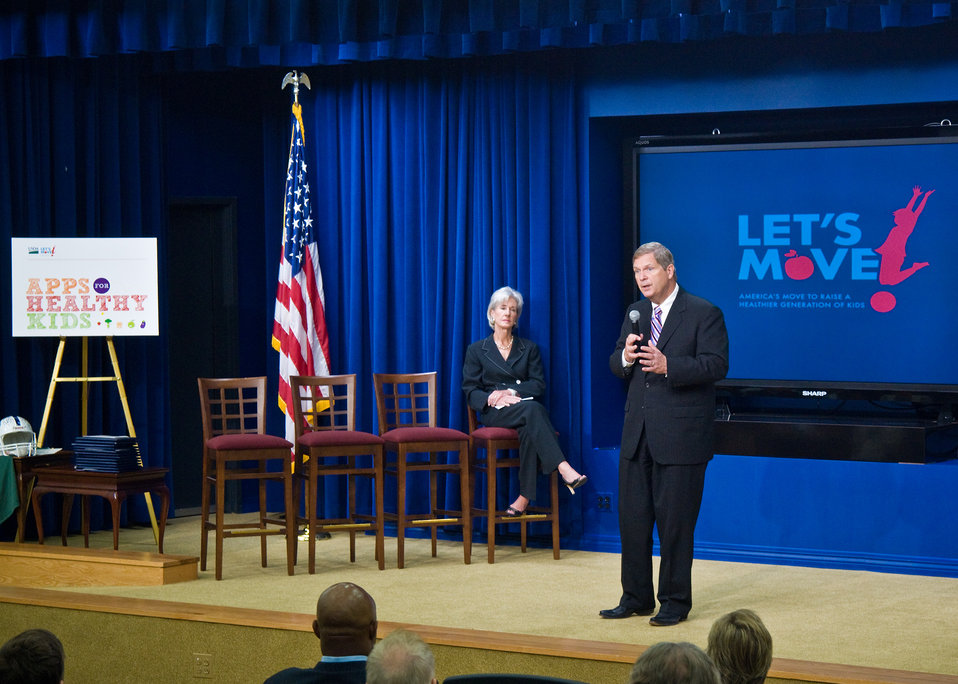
Agriculture Secretary Tom Vilsack and Health and Human Services Secretary Kathleen Sebelius honor the Winners of The Apps for Healthy Kids competition at the White House, Wednesday, September 29, 2010. The Apps for Healthy Kids competition is part of First Lady Michelle Obama’s Let’s Move campaign to end childhood obesity within a generation. The competition challenges software developers, game designers, students and other innovators to develop fun and engaging software tools and games to urge children, especially “tweens” (children ages 9-12) – directly or through their parents – to eat better and be more physically active. The applications are software tools or games for the web, personal computer, mobile handheld device, console or any software platform available to the public. USDA Photo 10di1506-87 by Bob Nichols